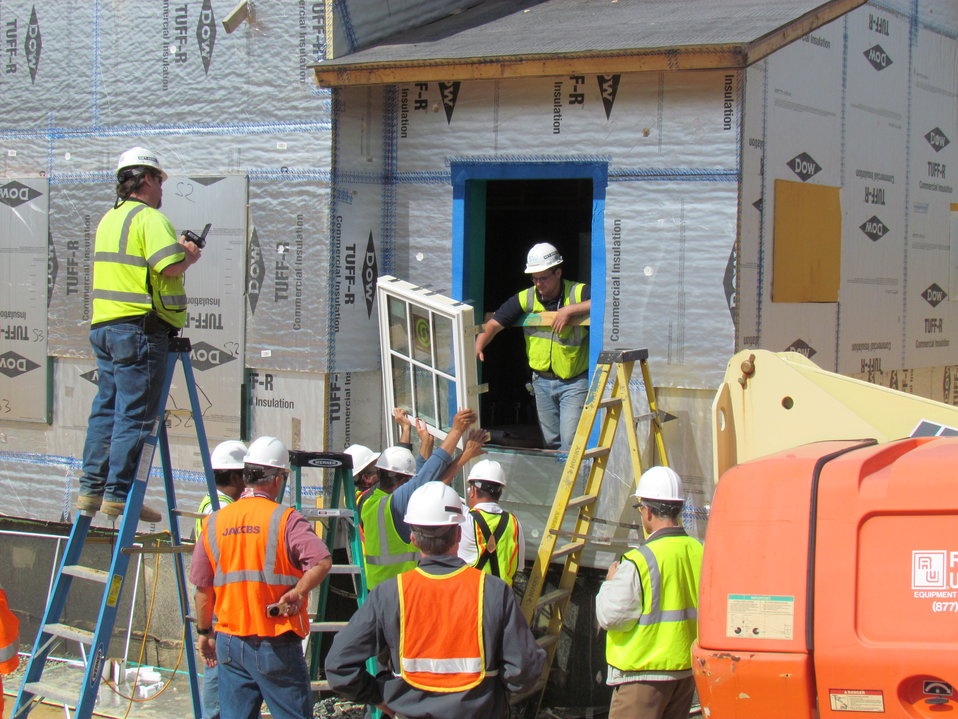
Net-Zero Energy Residential Test Facility - Installation of first window in facility. Representatives from window manufacturer assisting in installation.